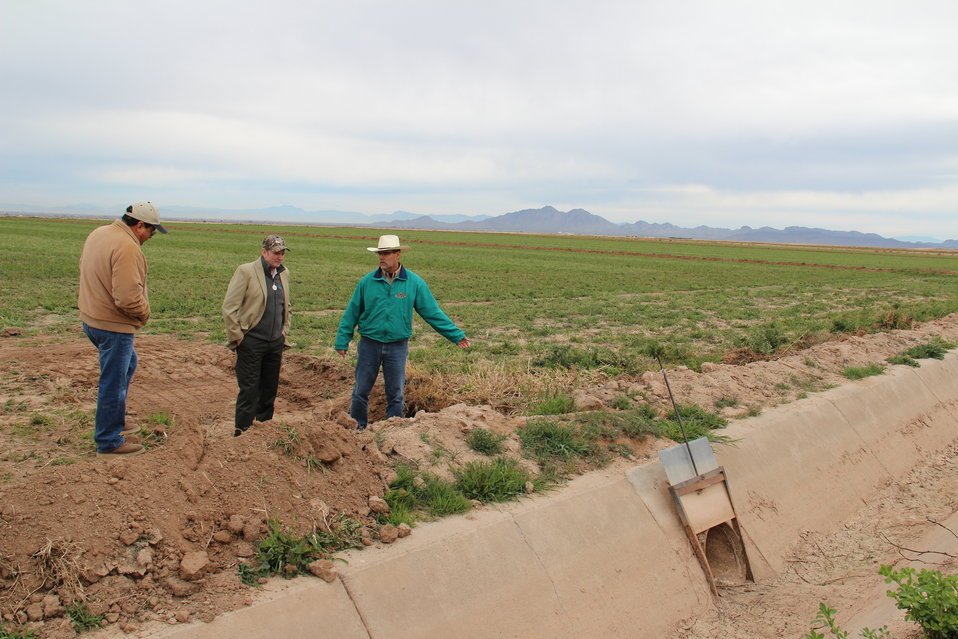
StrikeForce2

(L to R) U.S.Department of Agriculture (USDA) Natural Resource Conservation Service (NRCS) Chandler, AZ District Conservationist Philip F. Jacquez tells USDA NRCS Assistant Chief Kirk Hanlin and USDA NRCS Soil Conservationist Xavier “Gerry” Hernandez about efficient ways that farmers and ranchers can irrigate.